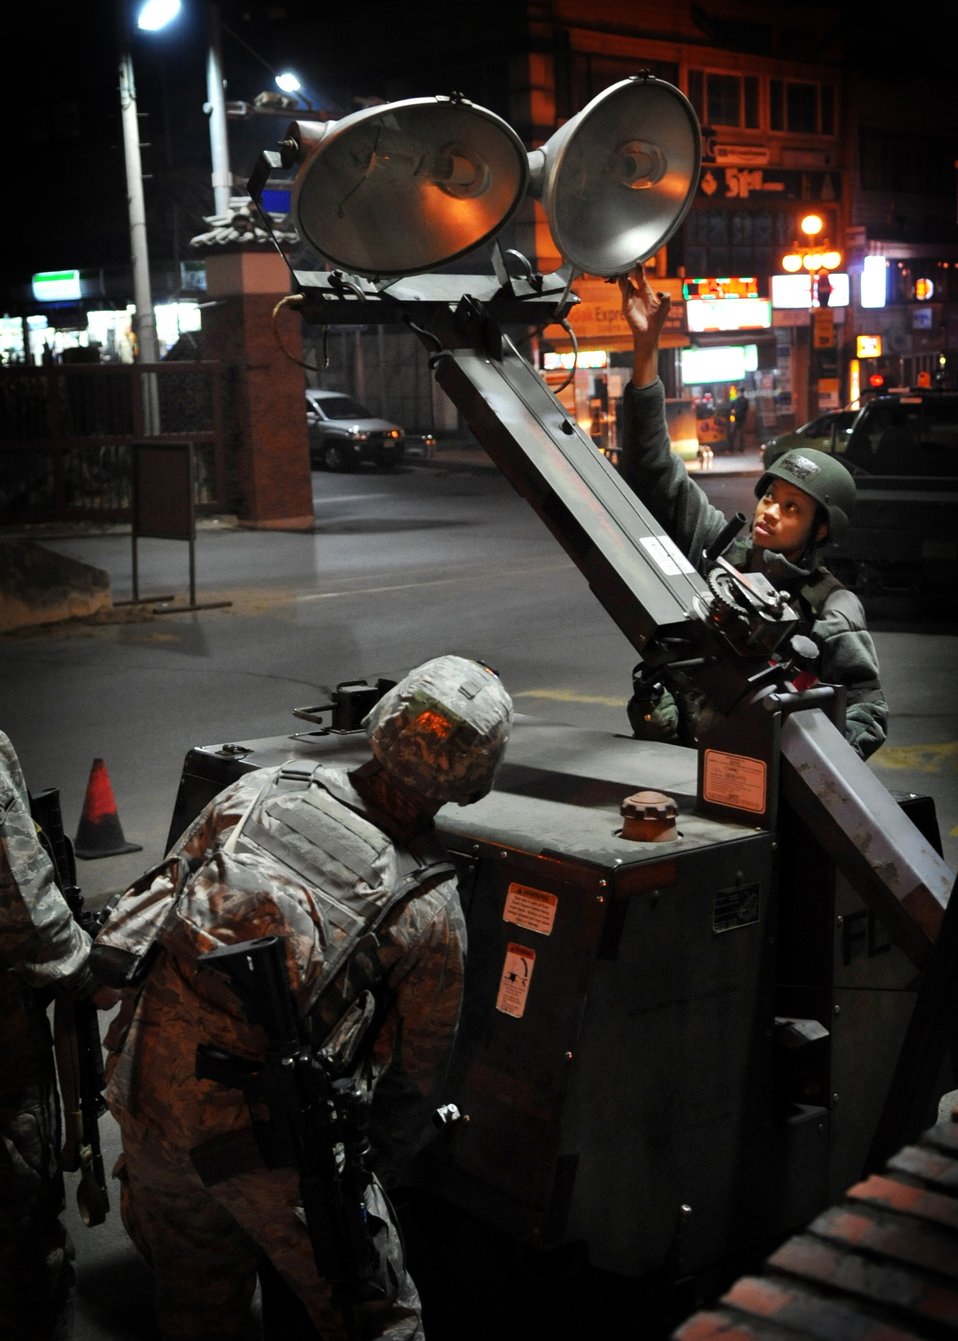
Let there be light

Airmen from the 51st Security Forces Squadron prepare lighting equipment April 3, 2011, as part of increased security measures during an operational readiness inspection at Osan Air Base, South Korea.